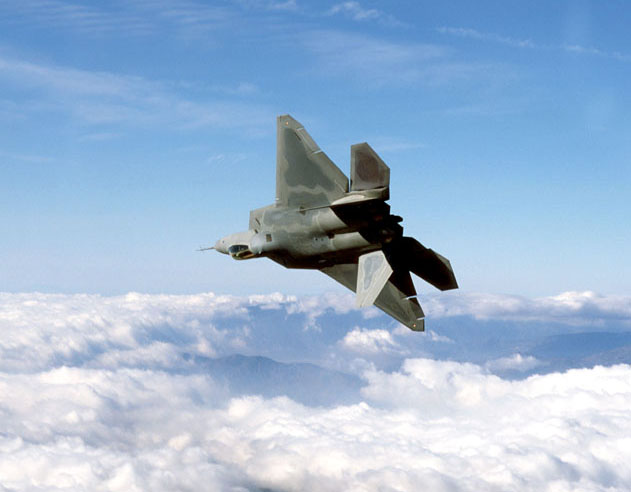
Raptor rolls

FILE PHOTO -- An F/A-22 Raptor performs a roll. The Raptor is the replacement for the F-15 Eagle. It is the most advanced fighter aircraft in the world, combining a revolutionary leap in technology and capability with reduced support requirements and maintenance costs. The F/A-22's integrated avionics gives it first-look, first-shot, first-kill capability that guarantees U.S. air dominance for decades.